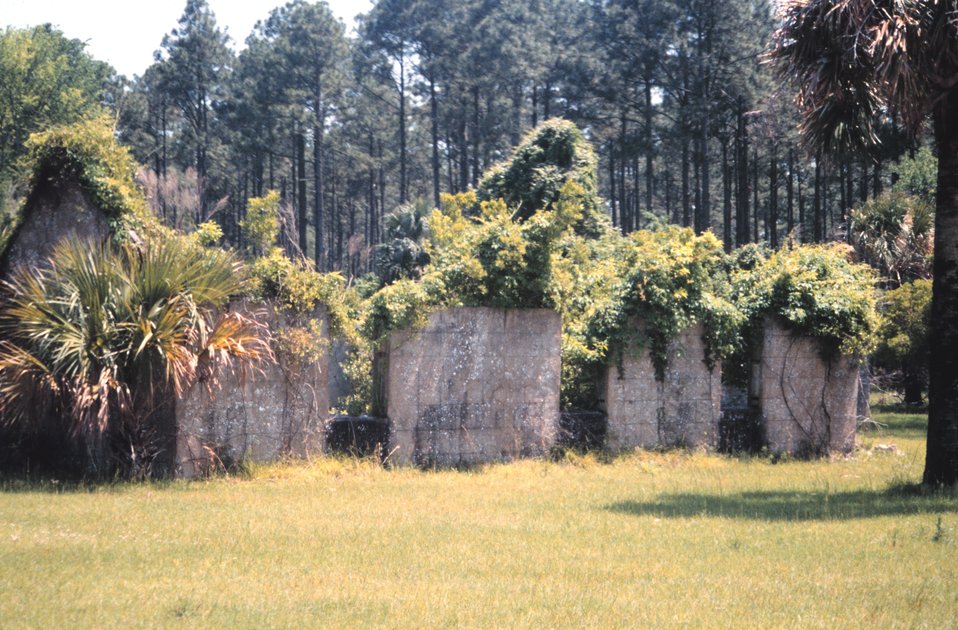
Tabby ruins at Chocolate on the northwest side of the island. Tabby refers to the building material which is a durable cement-like mixture of equal parts of water, sand, shell, and lime. These ruins are part of an antebellum plantation that was deserted following the Civil War.